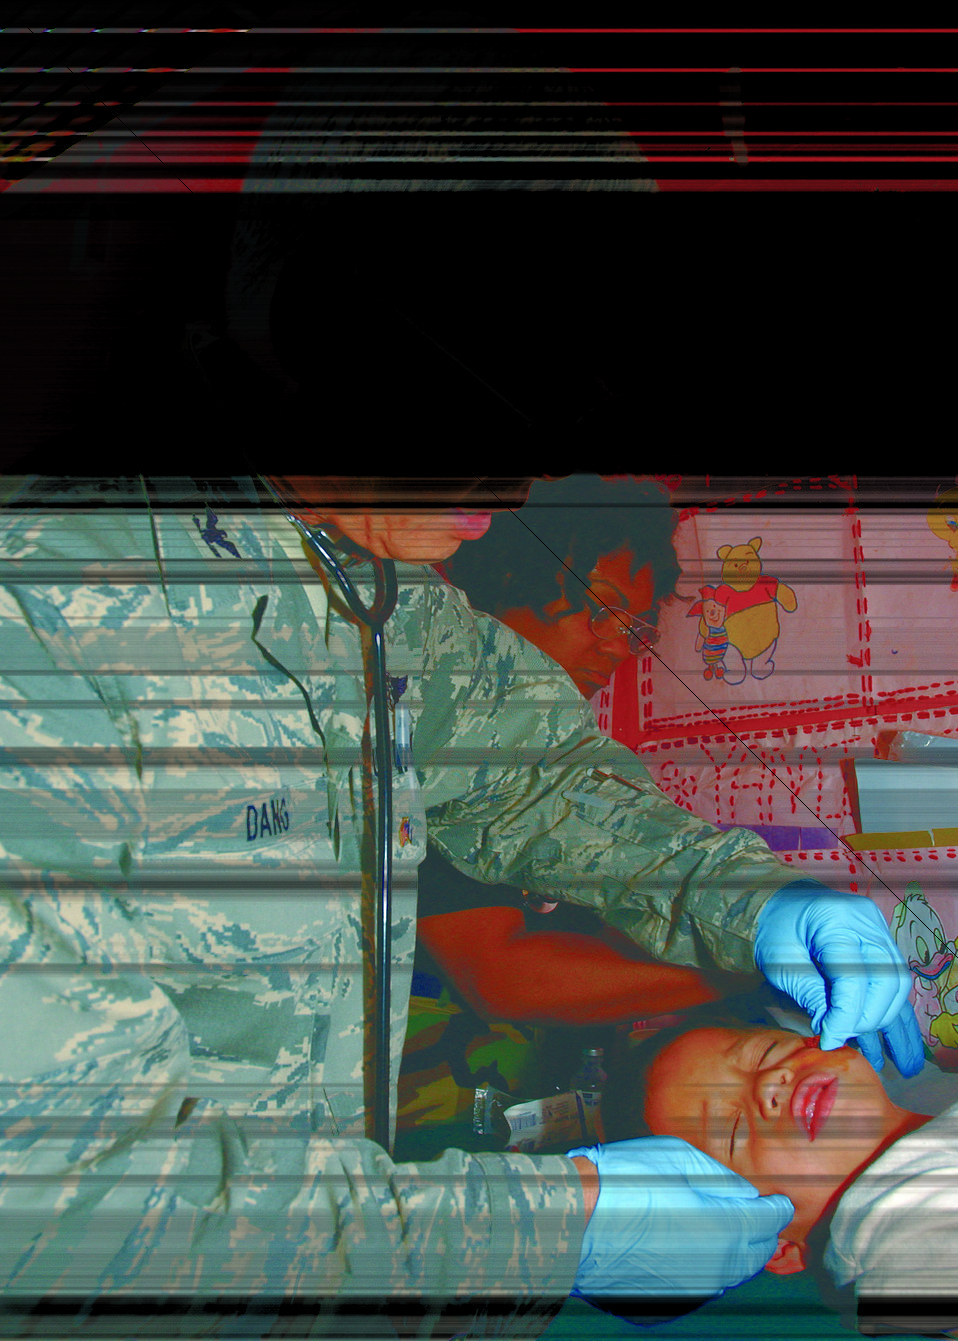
Airmen provide care to 1,500 Guatemalans

Col. (Dr.) Vincent Dang cleans 6-year-old Lester Omar Raymundo's face before making an incision Aug. 21 near Santa Rosa, Guatemala. The boy, a Guatemalan citizen in Aldea Estanzuelas near Santa Rosa, was sick for three months before the American medics arrived to provide treatment as part of a medical readiness training exercise. Colonel Dang is the 163rd Medical Group commander.